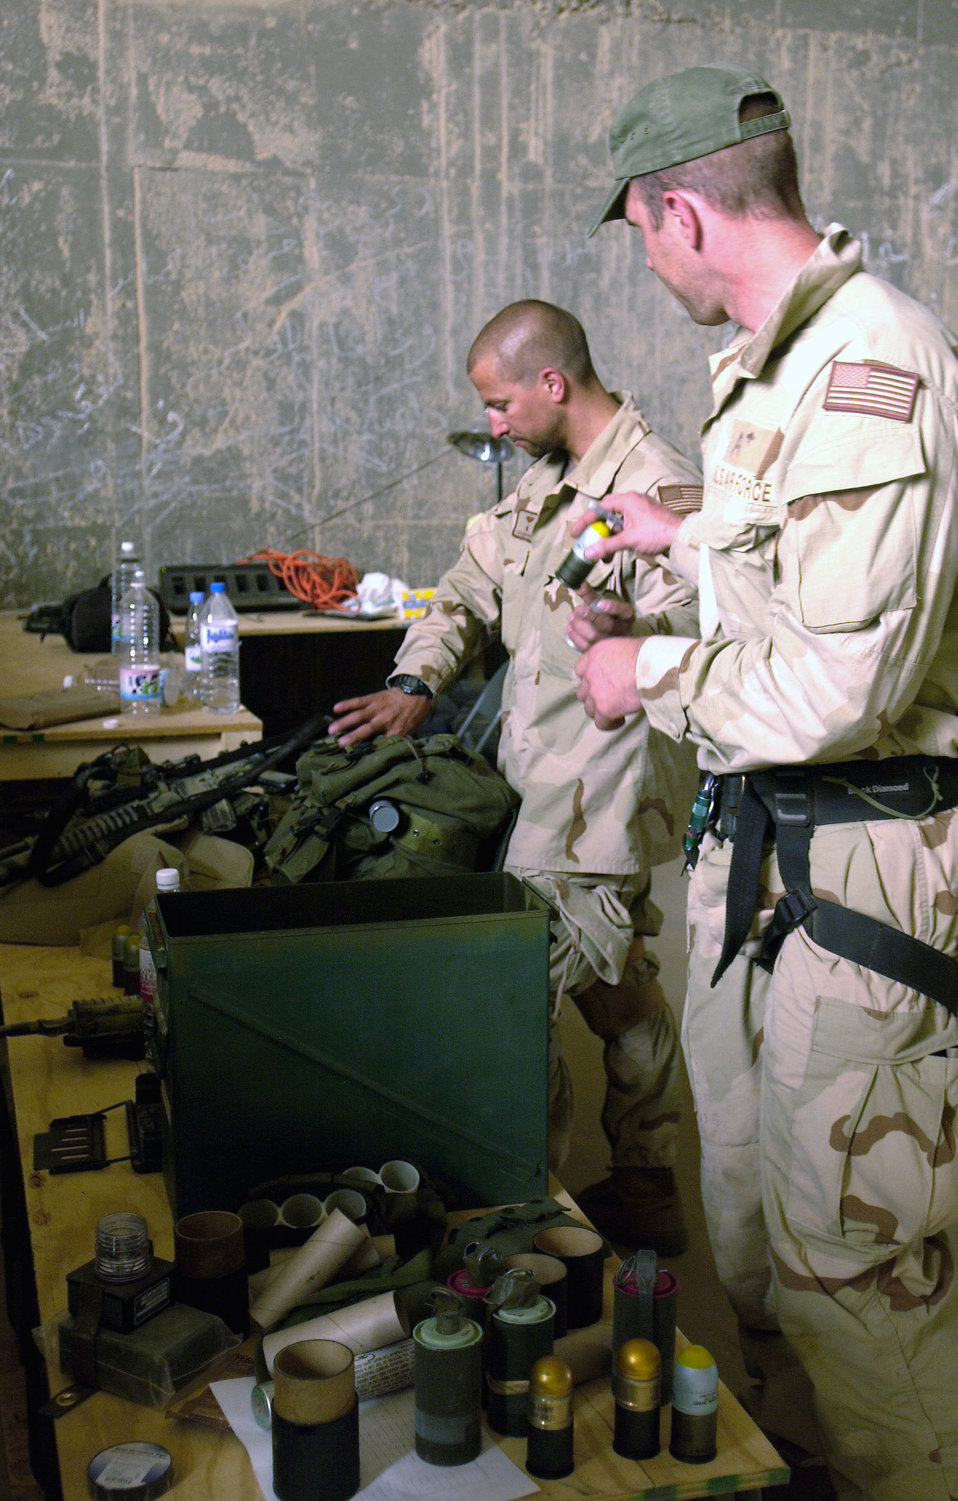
Ammo inventory

OPERATION IRAQI FREEDOM -- Pararescuemen from the 301st Rescue Squadron inventory their ammunition April 8 at a forward deployed location in southern Iraq during Operation Iraqi Freedom. Operation Iraqi Freedom is multinational coalition effort to liberate the Iraqi people, eliminate Iraq's weapons of mass destruction and bring an end to the regime of Saddam Hussein.